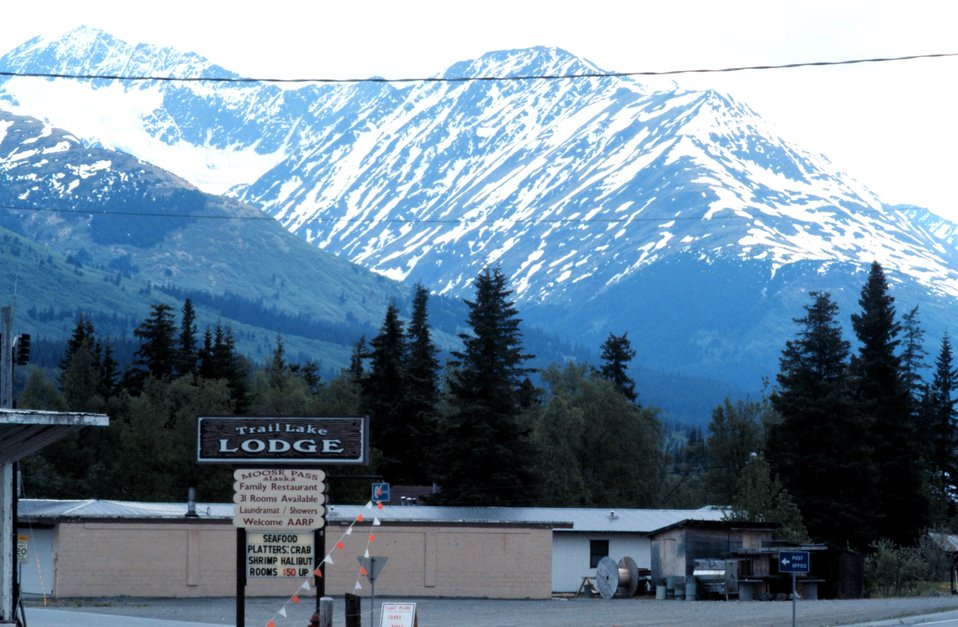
Trail Lake Lodge a Moose Pass on the Seward Highway